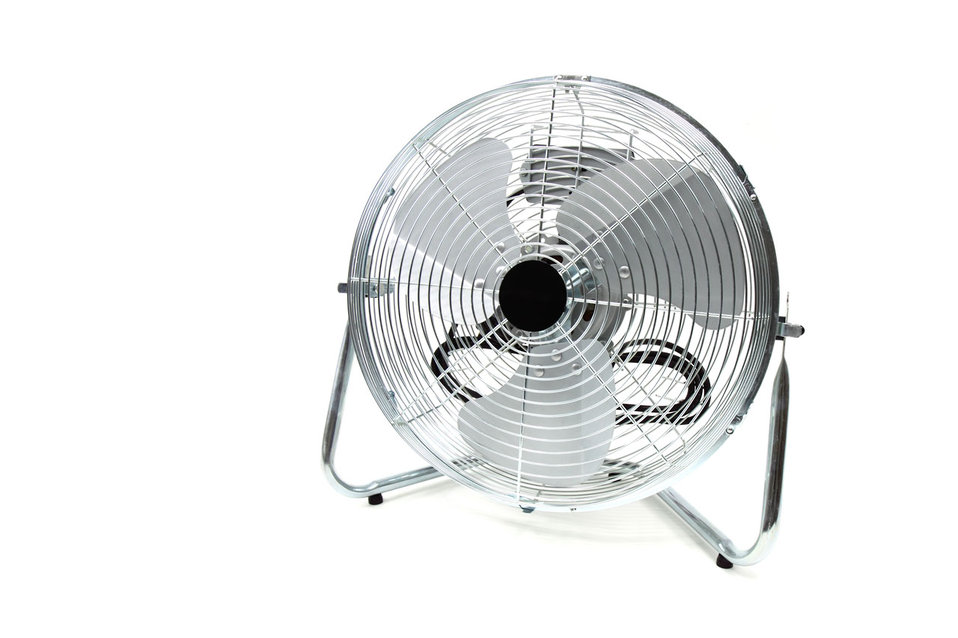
Electric fan isolated on white background.